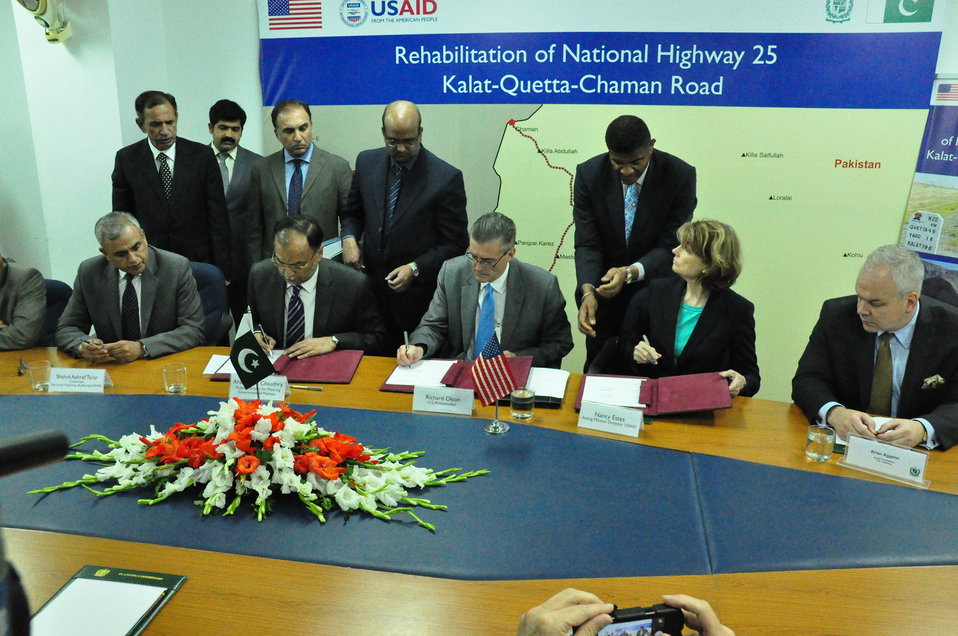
Project Implementation Letter for the Rehabilitation of National Highway 25 (Kalat-Quetta-Chaman Road)